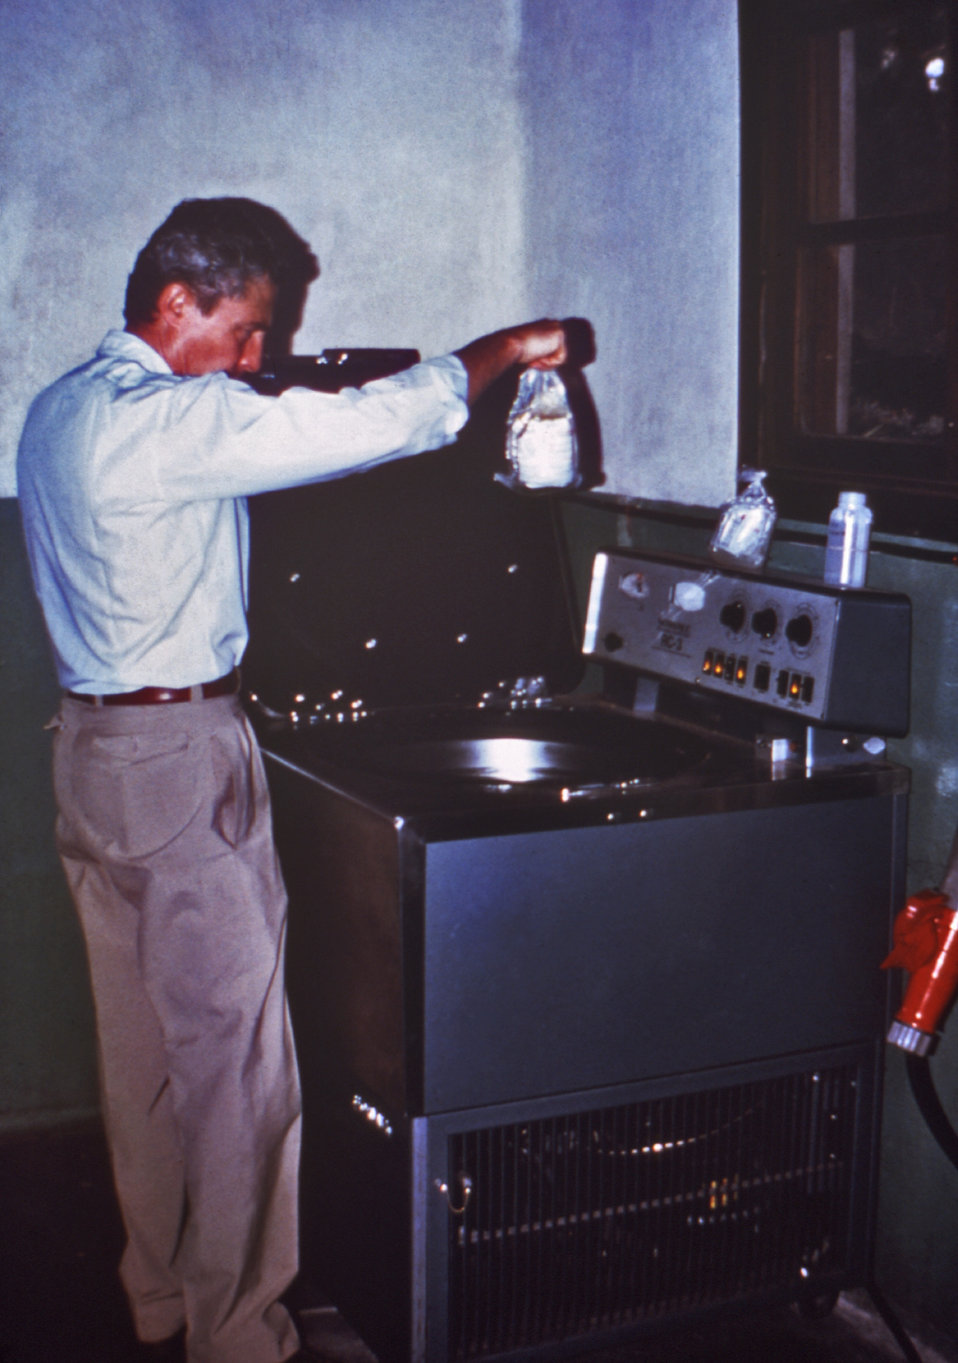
This 1976 photograph showed a field laboratorian using a centrifuge to separate blood in order to prepare plasma that was collected from patients who recovered from Ebola hemorrhagic fever (Ebola HF).